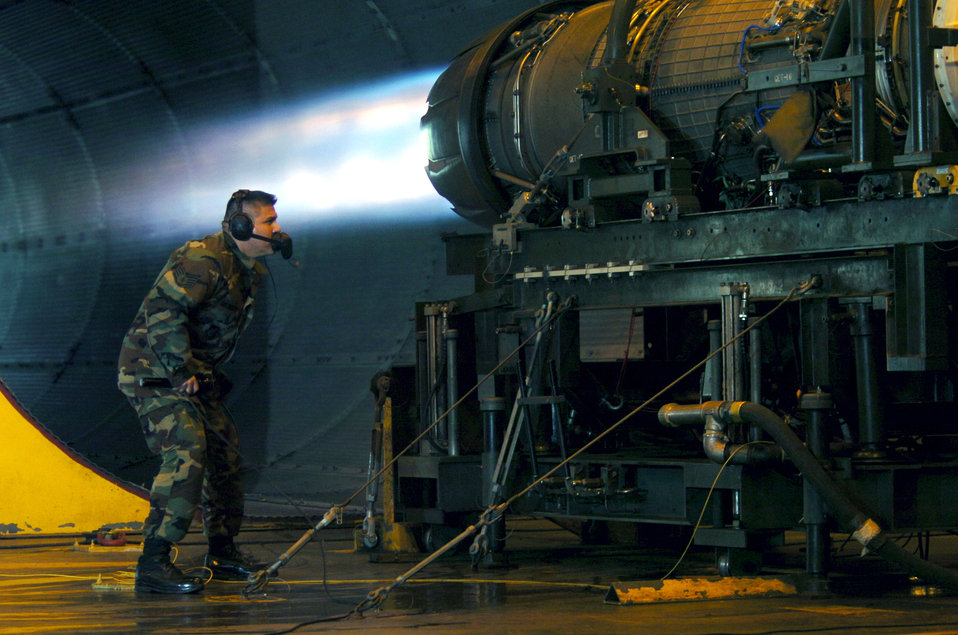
Keep engines running

OSAN AIR BASE, South Korea -- Staff Sgt. Daniel Guerra looks for fuel leaks while an F-16 Fighting Falcon engine